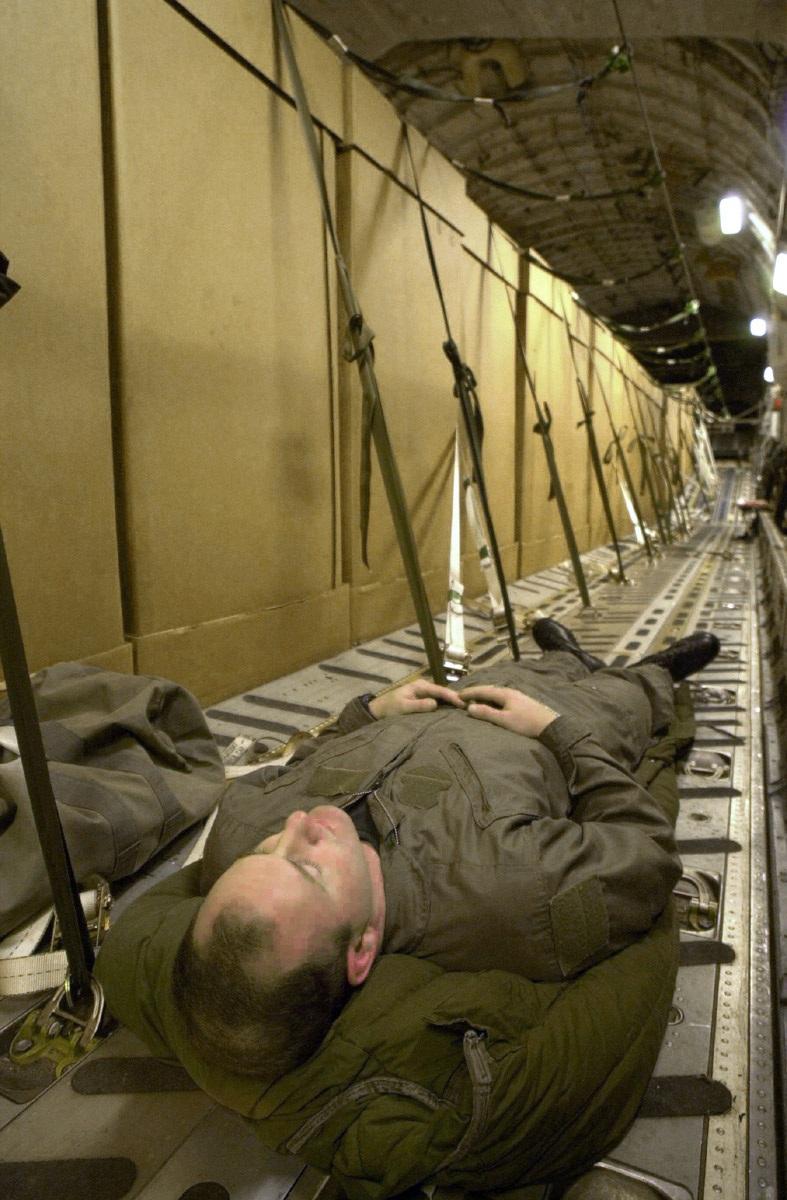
A Short Nap

OPERATION ENDURING REEDOM -- A U.S. Air Force crew member from Charleston Air Force Base, S.C., takes a nap before continueing high altitude drops of HDRs (Humanitarian Daily Rations) from their C-17 Globemaster III somewhere over northern Afghanistan, Oct, 18, 2001. The C-17 dropped 42 TRIADS containing 17,220 HDRs. More than 500,000 HDRs have been dropped into Afghanistan since the humanitarian relief effort began.